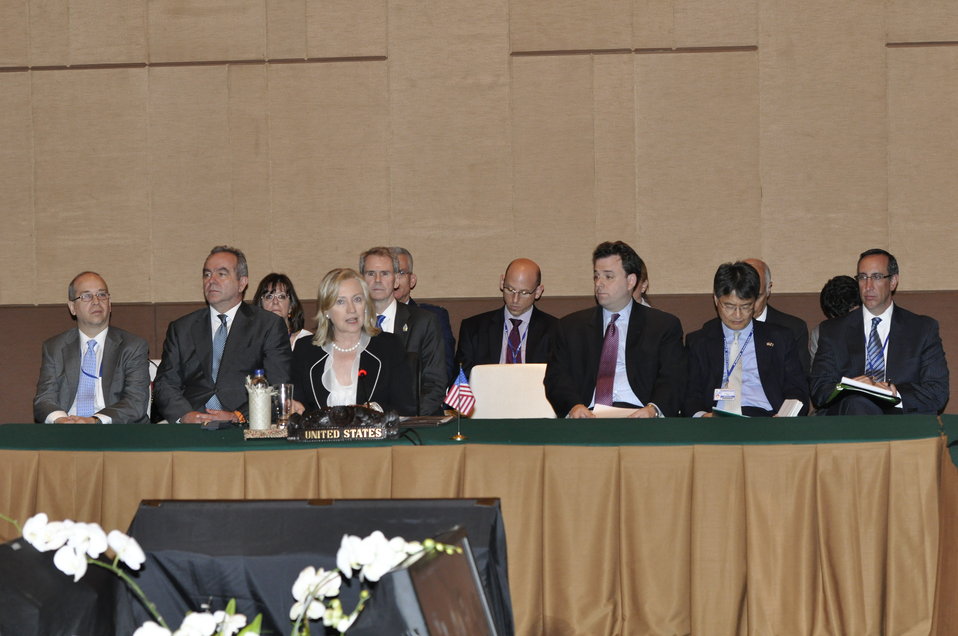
Secretary Clinton Participates in the U.S.-ASEAN Ministerial Meeting

U.S. Secretary of State Hillary Rodham Clinton participates in the U.S.–ASEAN Ministerial Meeting in Bali, Indonesia, on July 22, 2011. Seated behind the Secretary, left to right, are: U.S. National Security Council Director for Asian Affairs Daniel Russel, U.S. Assistant Secretary of State for East Asian and Pacific Affairs Kurt Campbell, U.S. Ambassador to ASEAN David Carden, U.S. Assistant Secretary of State for Political-Military Affairs Andrew Shapiro, U.S. Deputy Assistant Secretary of State for East Asian and Pacific Affairs Joseph Yun, and U.S. Deputy Assistant Secretary of Defense Robert Scher.